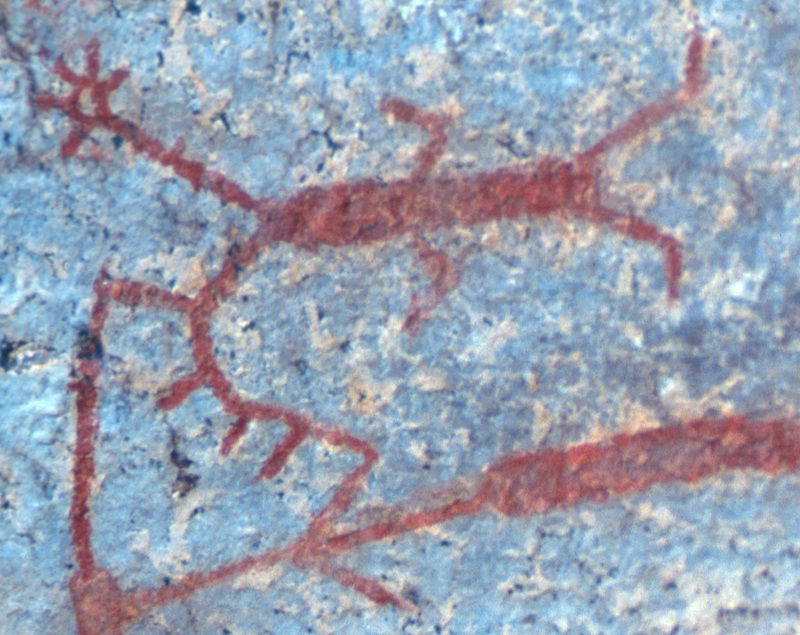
Petroglyph on the Lower Salmon River Cottonwood Field Office Upper Columbia-Salmon Clearwater District